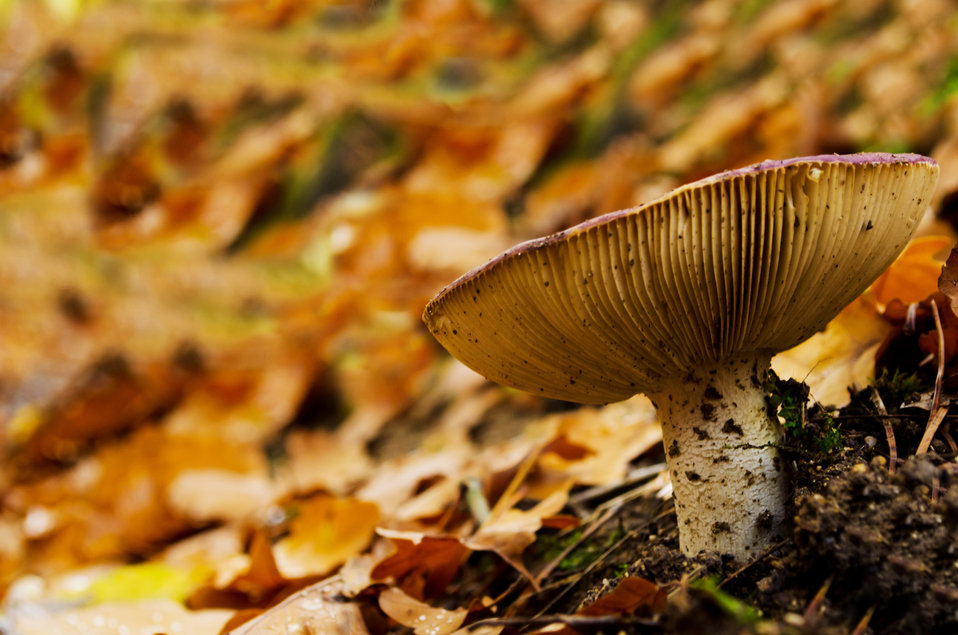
Mushroom - wallpaper.